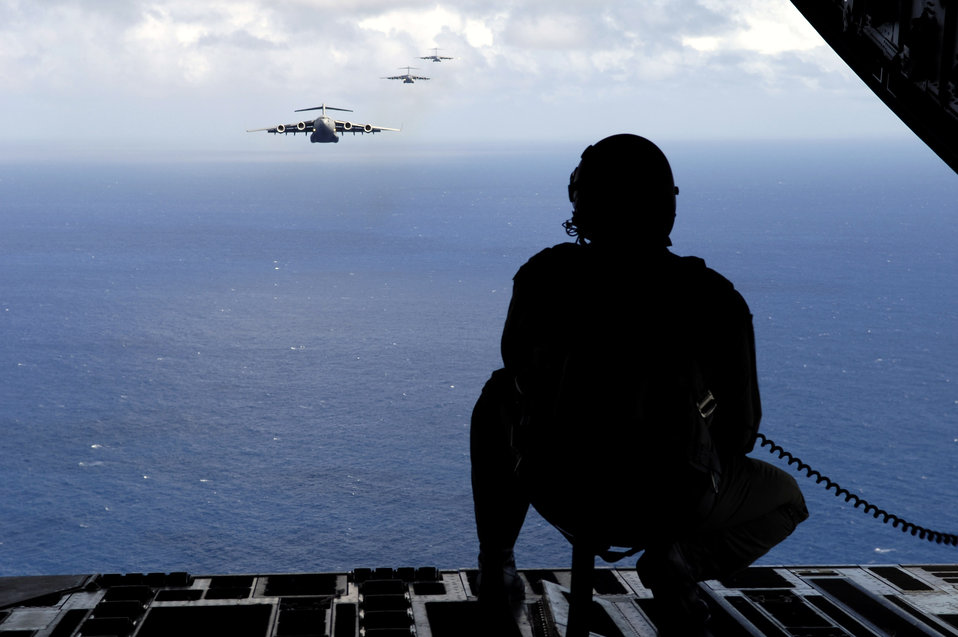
Hickam Airmen conduct 4-ship C-17 airdrop training

Senior Airman Todd Tichawa watches a formation of C-17 Globemaster III's from the back of his aircraft during a four-ship, airdrop training mission Aug. 13 over the island of Oahu, Hawaii. Airman Tichawa, a loadmaster with the 535th Airlift Squadron from Hickam Air Force Base, Hawaii, is taking part in the training to maintain currency and proficiency.